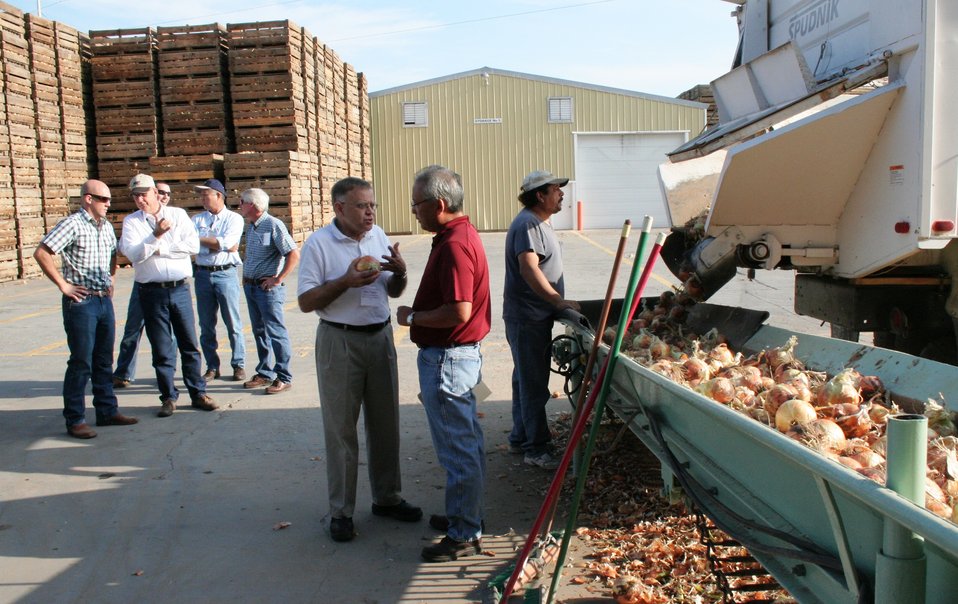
On the Road with Mike Taylor

FDA Deputy Commissioner Michael Taylor (foreground center left) talking with an employee of Murakami Produce, a seasonal packer and shipper of dry bulb onions located in Ontario, Ore. Mike and colleagues started a five-day tour of the Pacific Northwest on Sunday, Aug. 11, 2013 -- visiting Idaho, Oregon and Washington -- to get a first-hand look at produce production and irrigation operations, and to discuss the proposed Produce Safety Rule with growers, food industry representatives and state officials. For more about Mike's multi-region tour, read these FDA Voice blog posts:

• Hearing the Concerns of Maine Growers Striving for Agricultural Diversity
• On the Road with Mike Taylor: Touring the Pacific Northwest
• On the Road with Mike Taylor, Day 2: Frank Talk in Farm Country
• On the Road with Mike Taylor, Day 3: Families and Partnerships
• On the Road with Mike Taylor, Day 4: Looking to the Future